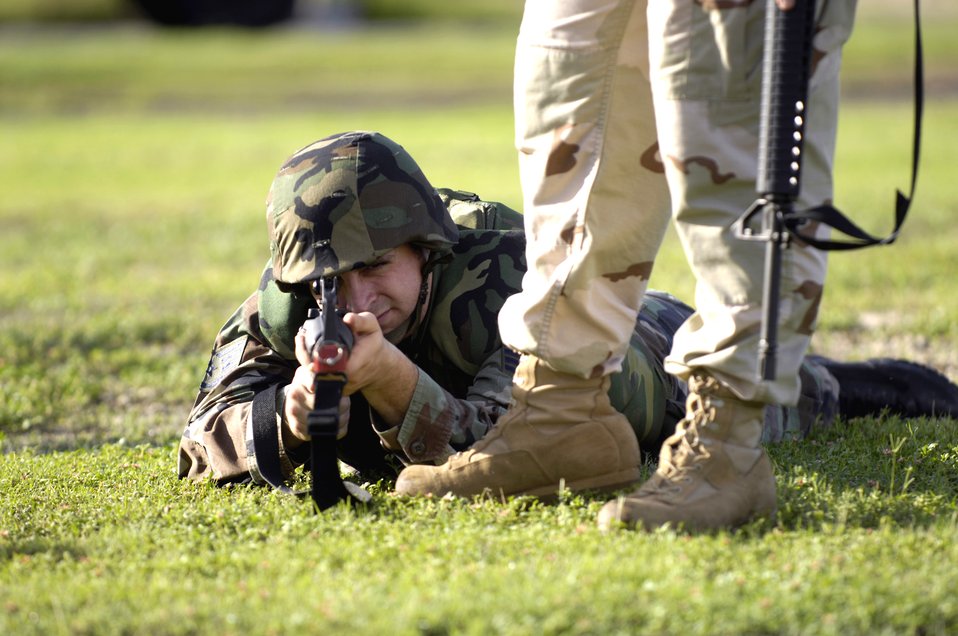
Combat course prepares Airmen for AEF

A student attending the Expeditionary Combat Skills Training Course Nov. 3 at Hickam Air Force Base, Hawaii, fires from the prone position during an individual movement techniques class as an instructor observes.